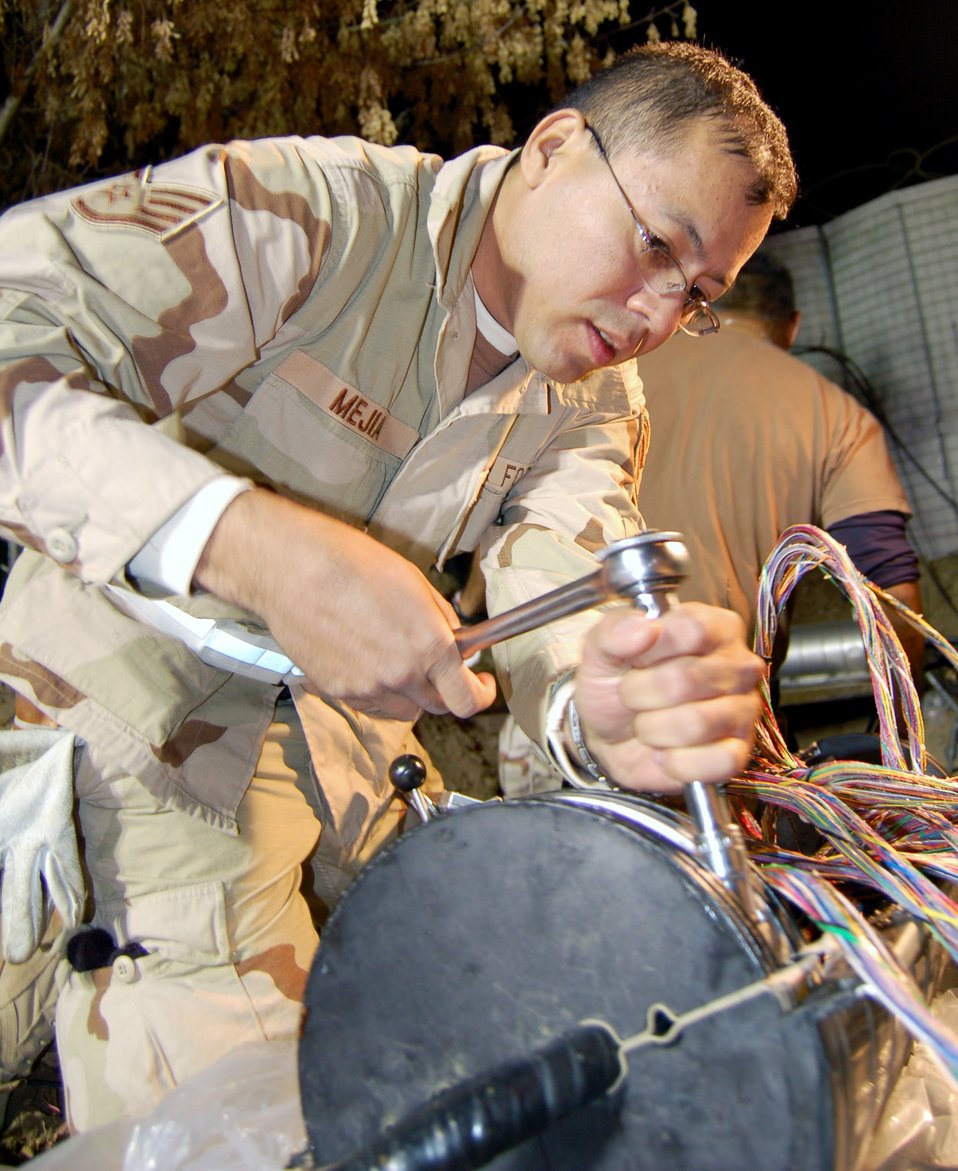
Communication gurus upgrade base networks

Staff Sgt. Mario Mejia loosens a telephone line splice case in order to feed the line cables into the ends of the case at Manas Air Base, Kyrgyzstan. Sergeant Mejia is one of the five engineering and installation team members helping the 376th Expeditionary Communications Squadron transfer all DSN numbers to the new telephone switch. Sergeant Mejia is deployed from the 272nd Engineering and Installation Squadron at Laporte, Texas.